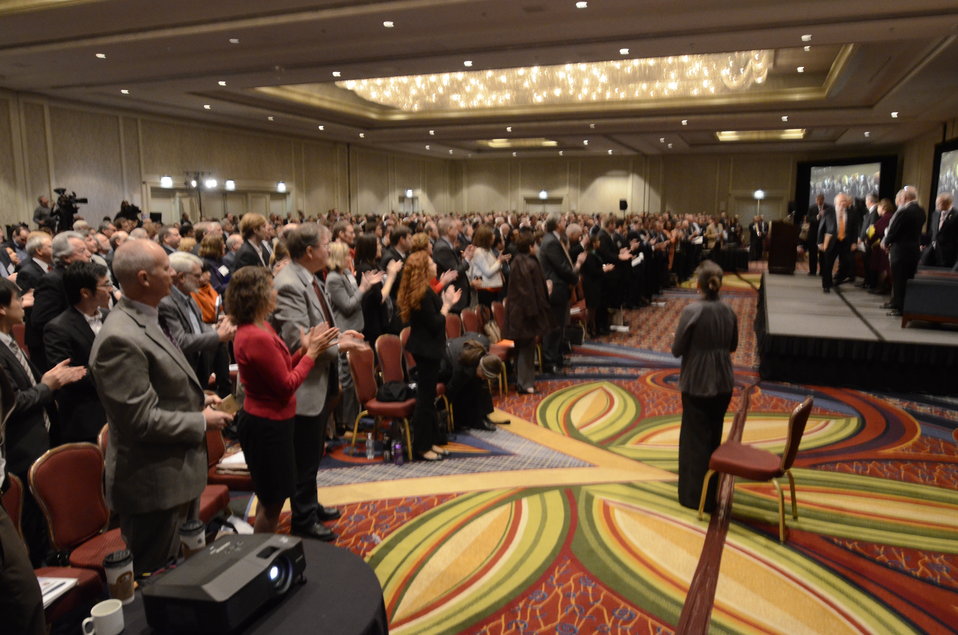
At the 2012 Agricultural Outlook Forum, “Moving Agriculture Forward” in Arlington, VA, held on Thursday, February 23, 2012, 7 former Secretaries of Agriculture sat on the plenary panel “Visions of the Future” hosted by current Agriculture Secretary Tom Vilsack. A diverse group of interested reporters, stakeholders, and farmers attended the plenary session with the former Secretaries.